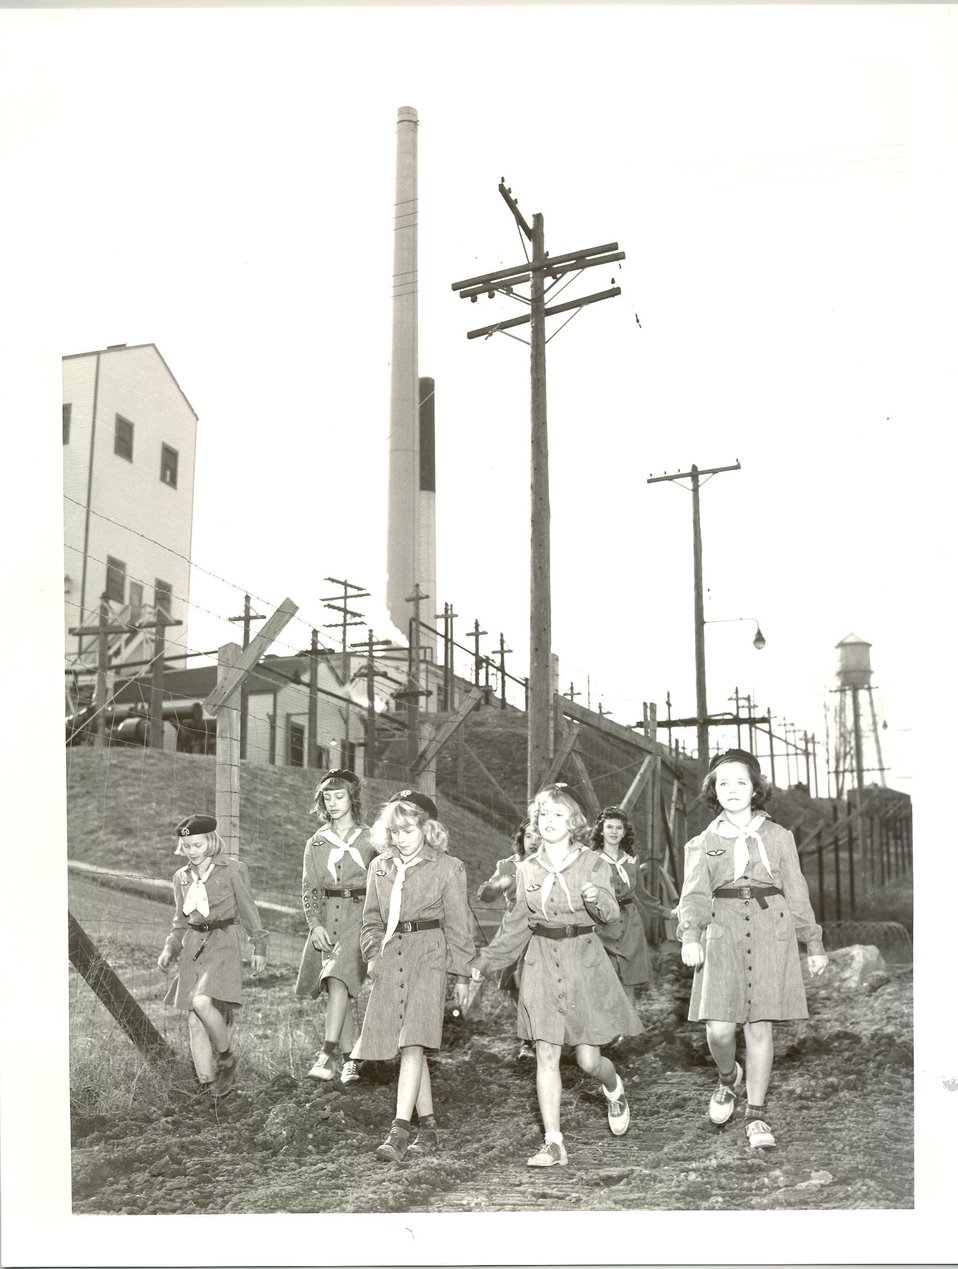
Group of Girl Scouts by Fence at ORNL